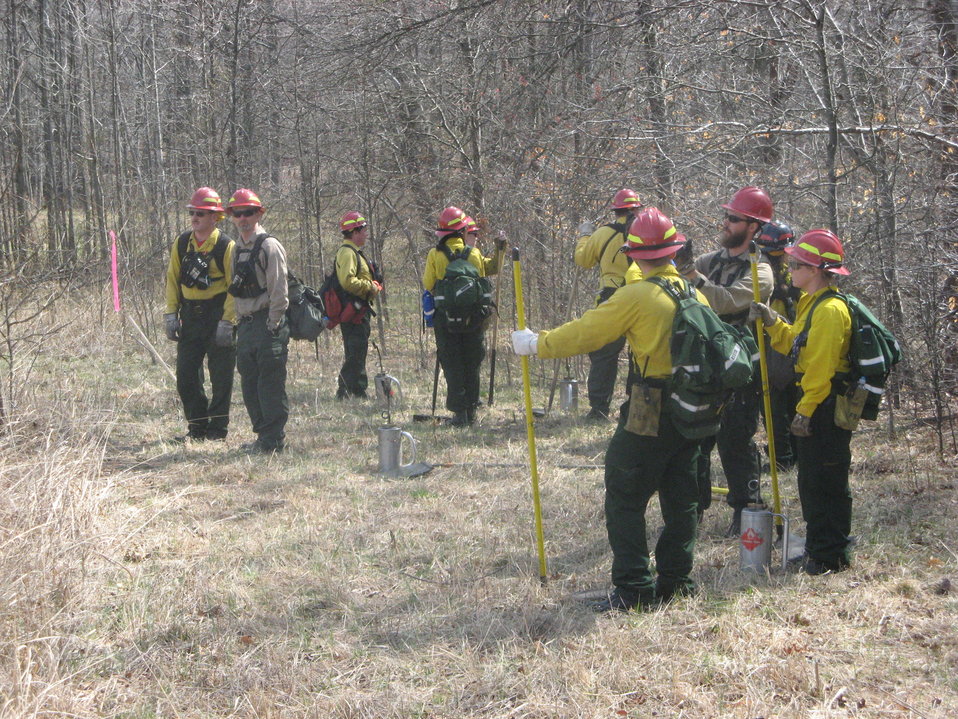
Wildland firefighters ready to do controlled burn

Laurel, MD: Firefighters gather to do a controlled burn to benefit grassland breeding birds at Patuxent National Research Refuge.